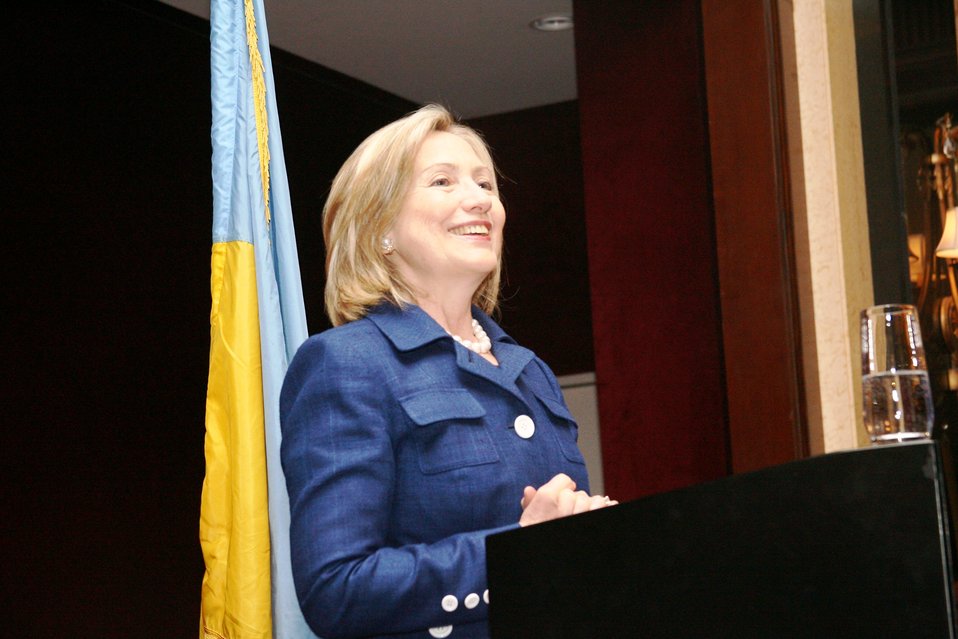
Secretary Clinton Addresses U.S. EmbassyStaff and Families in Ukraine

U.S. Secretary of State Hillary Rodham Clinton addresses U.S. Embassy Kyiv staff and family members in Kyiv, Ukraine July 2, 2010.